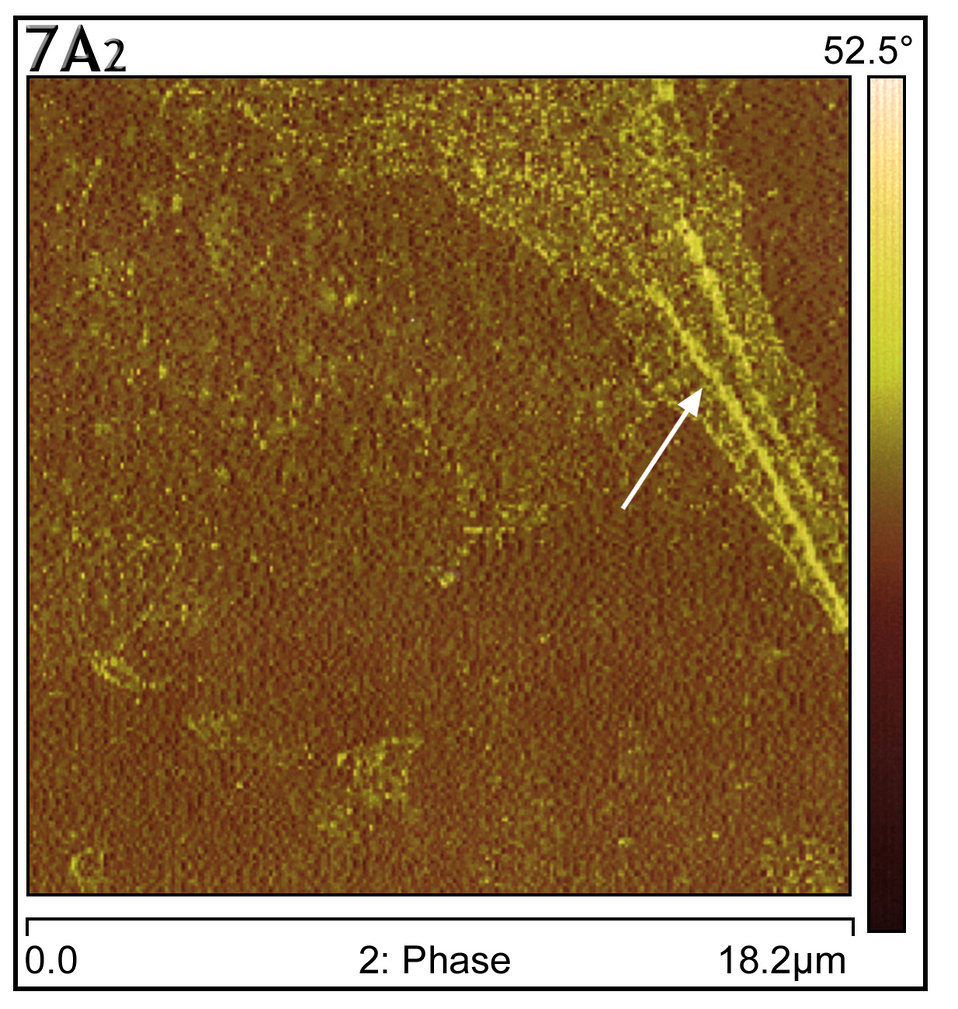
This AFM showed gross thickening of cell cytoplasmic skeletal filaments within the cell surface pseudopodia (arrow).